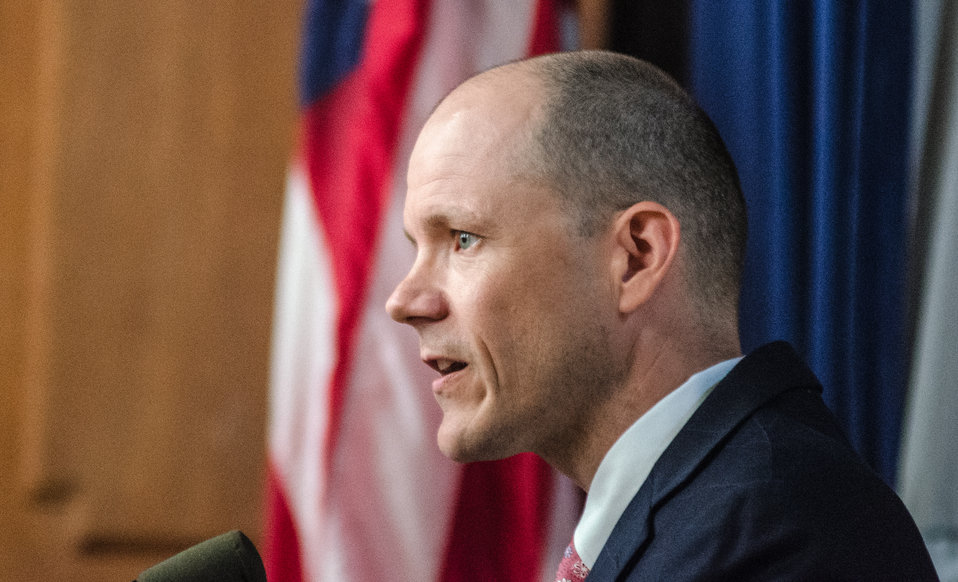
U.S. Department of Agriculture (USDA) Rural Development’s (RD) Acting Under Secretary Doug O'Brien speaks at the 2nd Annual Cultural Transformation kickoff opening ceremony and forums, themed “Employees Influencing Change,” on Tuesday, Aug. 13, 2013 at USDA in Washington, D.C.